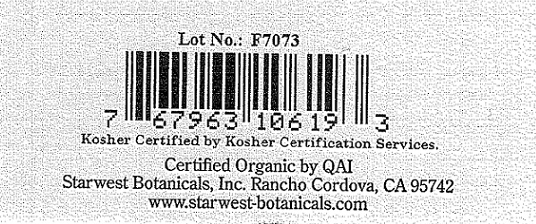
RECALLED - Organic Celery Seed

December 14, 2011 - Starwest Botanicals Recalls Starwest Organic Celery Seed. Due to Potential Salmonella Contamination.